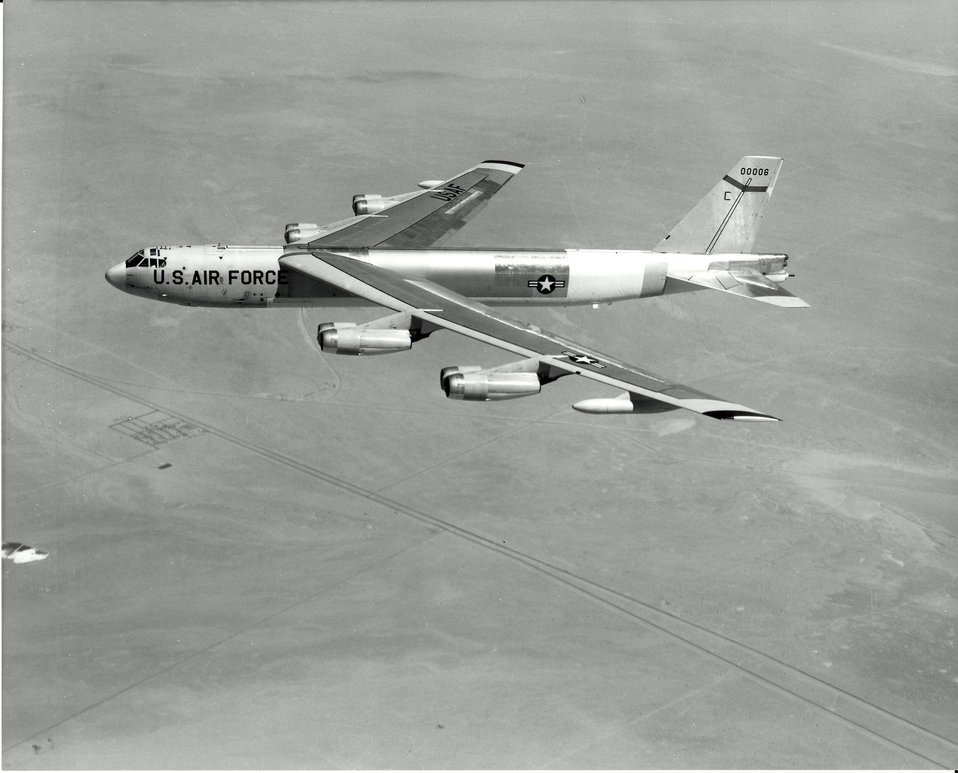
B-52H Stratofortress in the early 1960s

The B-52H Stratofortress, the last model for the classic strategic bombers, underwent test and development at Edwards Air Force Base, Calif., in the early 1960s. The aircraft today remains a vital component of American's long-range power projection capability.